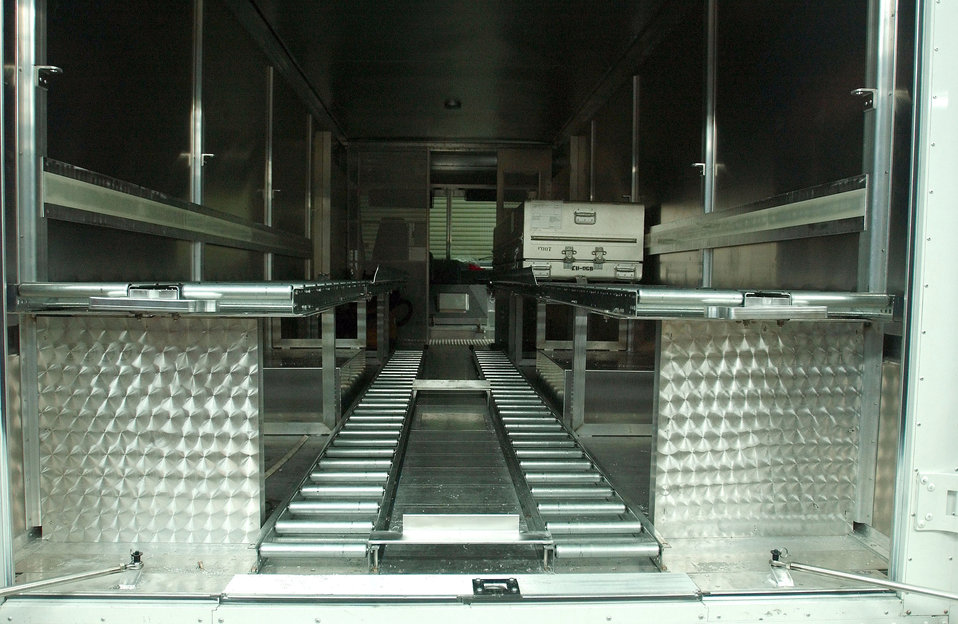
Remodeled mortuary transfer vehicle

DOVER AIR FORCE BASE, Del. -- Airmen from the 436th Equipment Maintenance Squadron fabrication flight here redesigned a mortuary vehicle to increase the capacity from two transfer cases to six.